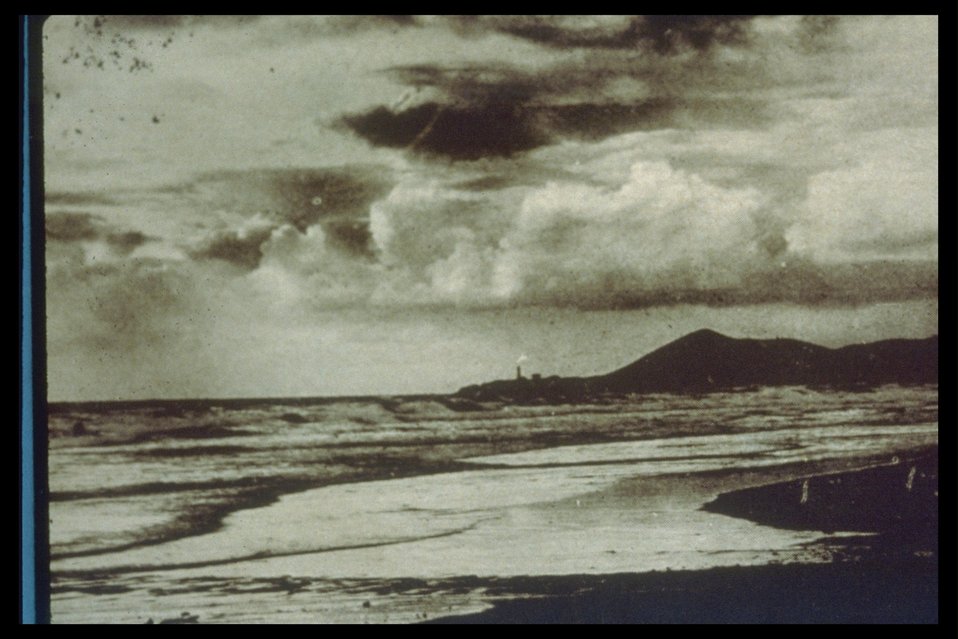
Early Yaquina Head, picture taken near Nye Beach.